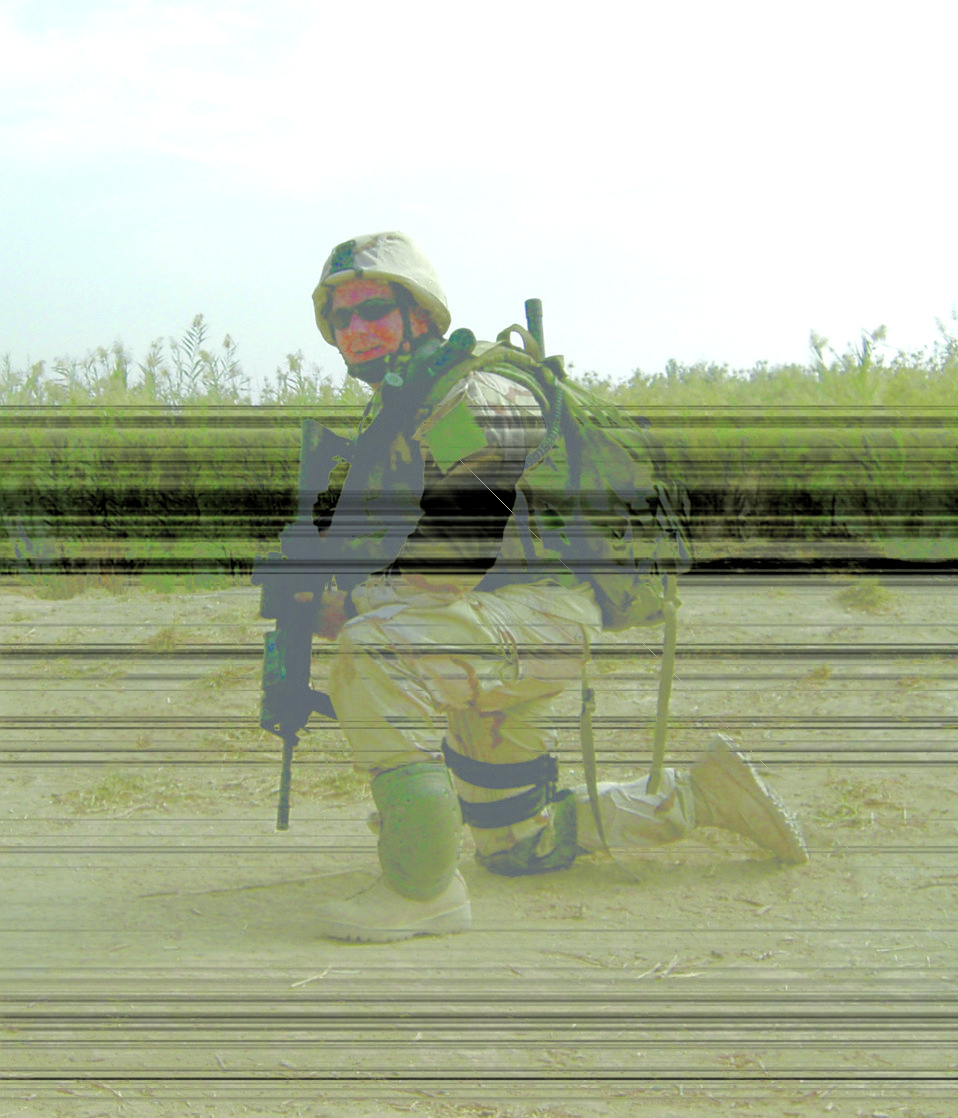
Predators help TACP Airmen with mission

BALAD AIR BASE, Iraq -- Senior Airman Jeff Varnum goes out on a combat patrol outside Balad. He is a joint terminal attack controller with the 116th Expeditionary Air Support Operations Squadron.